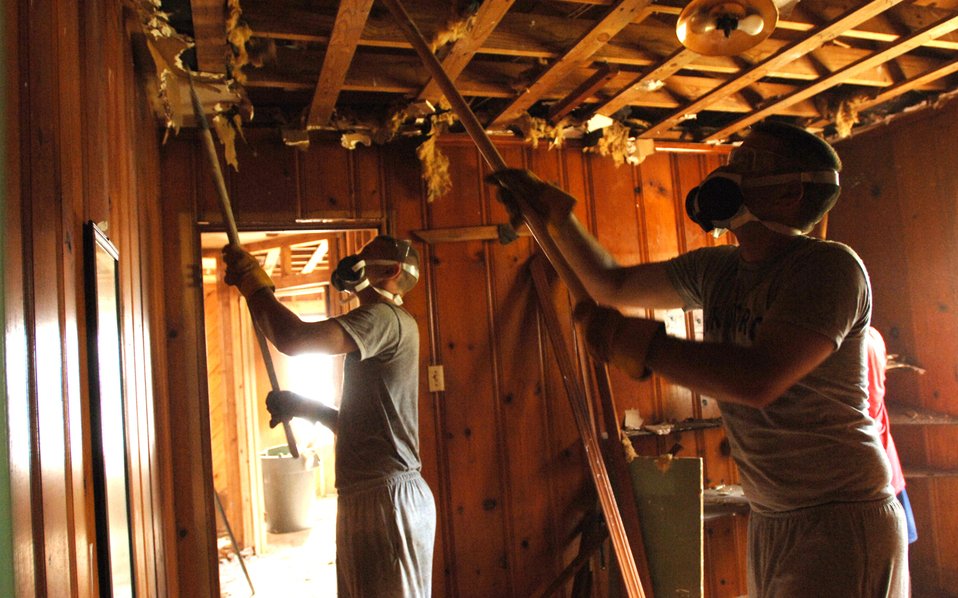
Helping the community recover

Airmen Basic Jonathan Houghton and Zachary Murray tear down a water-damaged ceiling in a house in Biloxi, Miss., Aug. 25. The civilian's home was heavily damaged by Hurricane Katrina one year ago. The Airmen are trainees with the 332nd Training Squadron at Keesler Air Force Base, Miss.